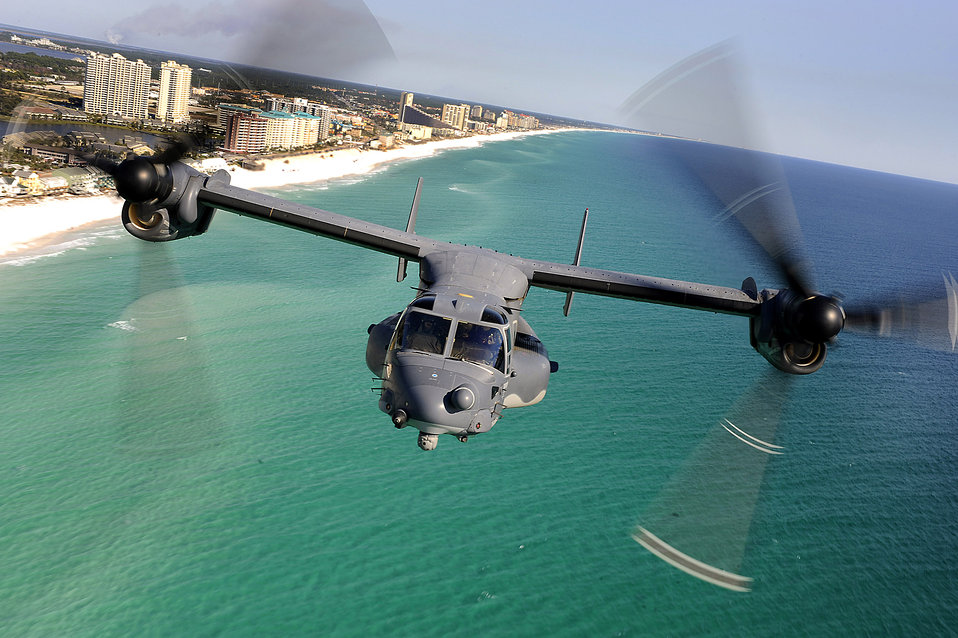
Taking the scenic route

A CV-22 Osprey aircraft from the 8th Special Operations Squadron at Hurlburt Field, Fla., flies Jan. 31 over Florida's Emerald Coast. While over the water, the crew practiced using a hoist, which is used to rescue stranded people.